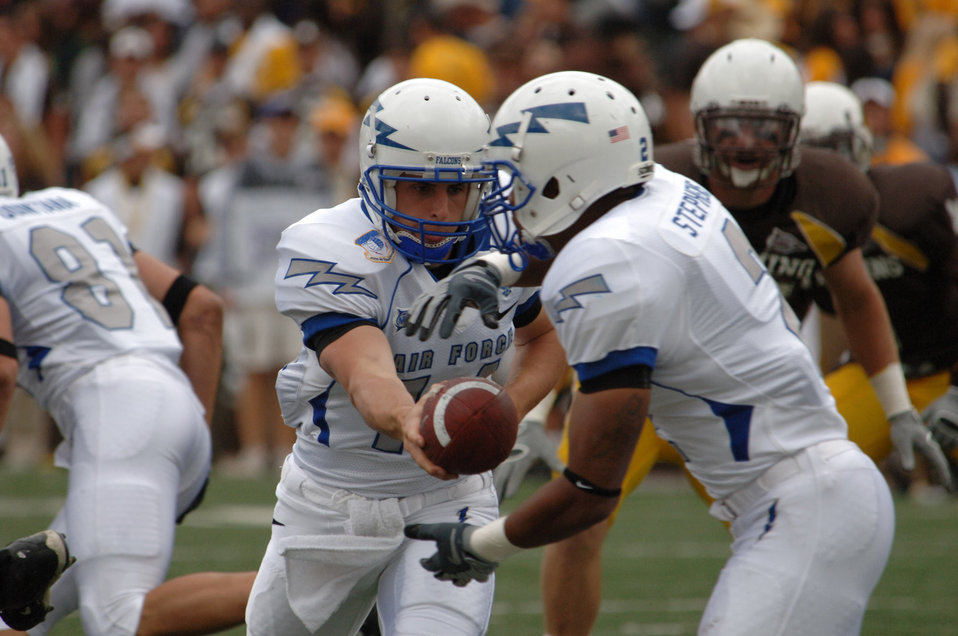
Football: Falcons defense stifles Wyoming, 23-3

U.S. Air Force Academy quarterback Shea Smith hands off to tailback Savier Stephens Sept. 6 in Laramie, Wyo. Smith recorded 43 yards rushing and Stephens another 37 yards, and the Falcons offense ground out 261 yards on the ground in a 23-3 win over Wyoming.